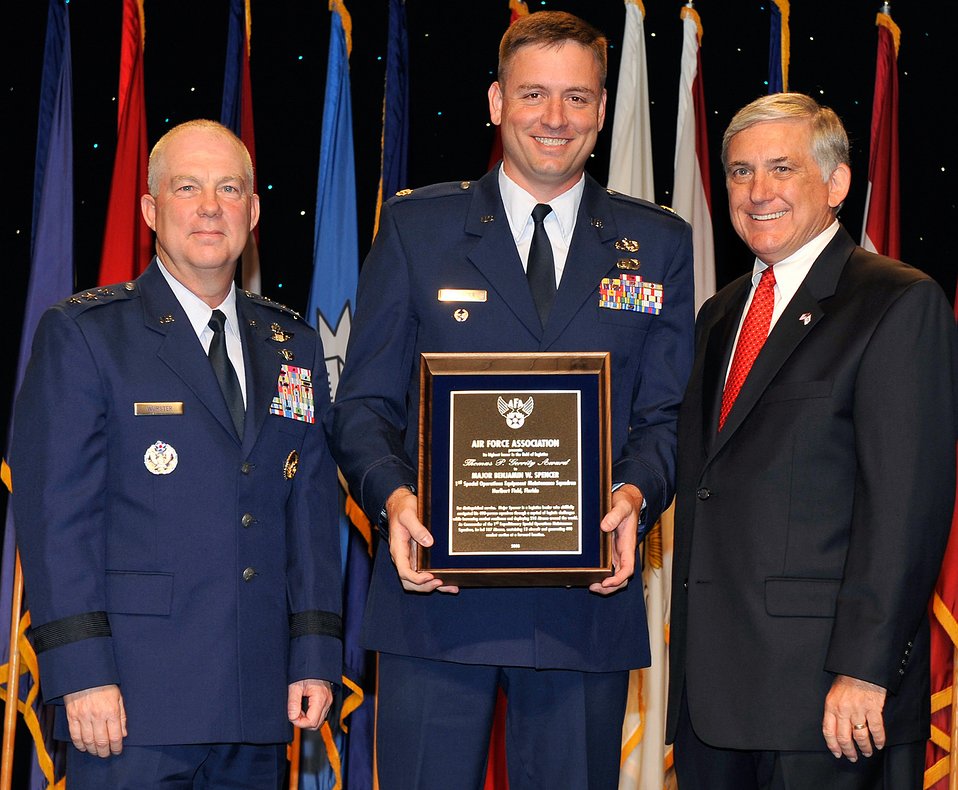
Special Operations Command earns multiple AFA awards

Maj. Benjamin Spencer (center) receives the Thomas P. Gerrity Award at the Air Force Association's 2008 Air and Space Conference and Technology Exposition from Lt. Gen. Donald C. Wurster (left) and Robert Largent (right) Sept. 10 in Washington, D.C. The Gerrity Award recognizes the individual who made the most outstanding contribution in the field of systems and logistics. Major Spencer is the 1st Special Operations Equipment Maintenance Squadron commander. General Wurster is the Air Force Special Operations Command commander, and Mr. Largent is the Air Force Association chairman